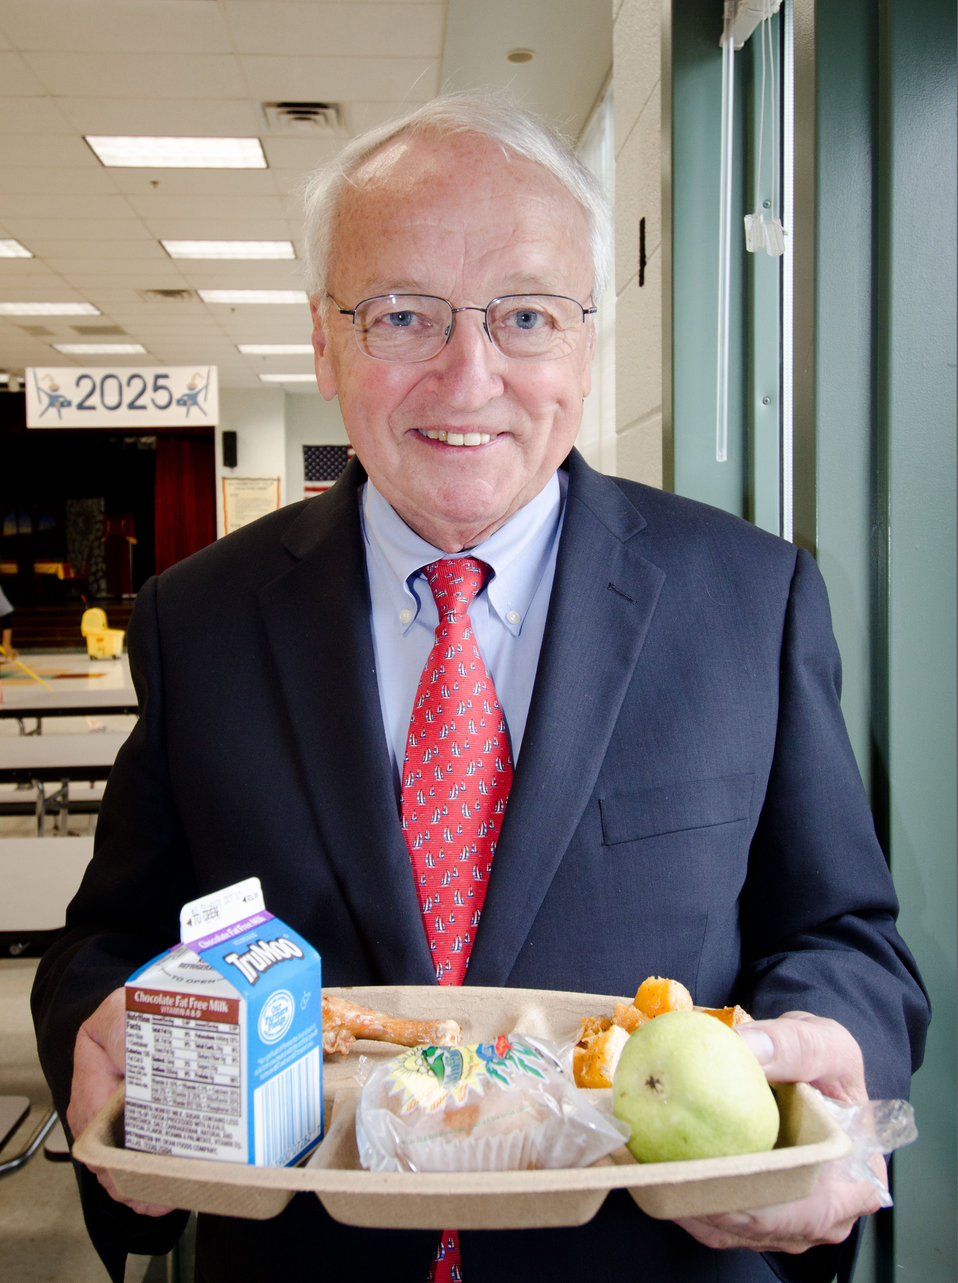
Under Secretary for Food, Nutrition and Consumer Services Kevin Concannon enjoyed a lunch during his visit to Nottingham Elementary School in Arlington, VA, on Wednesday, October 12, 2011. For this National School Lunch Week event, farmers from Big Riggs Farm, Romney, WV and Maple Avenue Market Farm, Vienna, VA were very popular with the students today. The menu included roasted chicken, roasted butternut squash with dried cranberries, farm fresh mixed lettuce salad, turkey wraps, pita wedges, hot muffins, carrots, Asian pears and more.